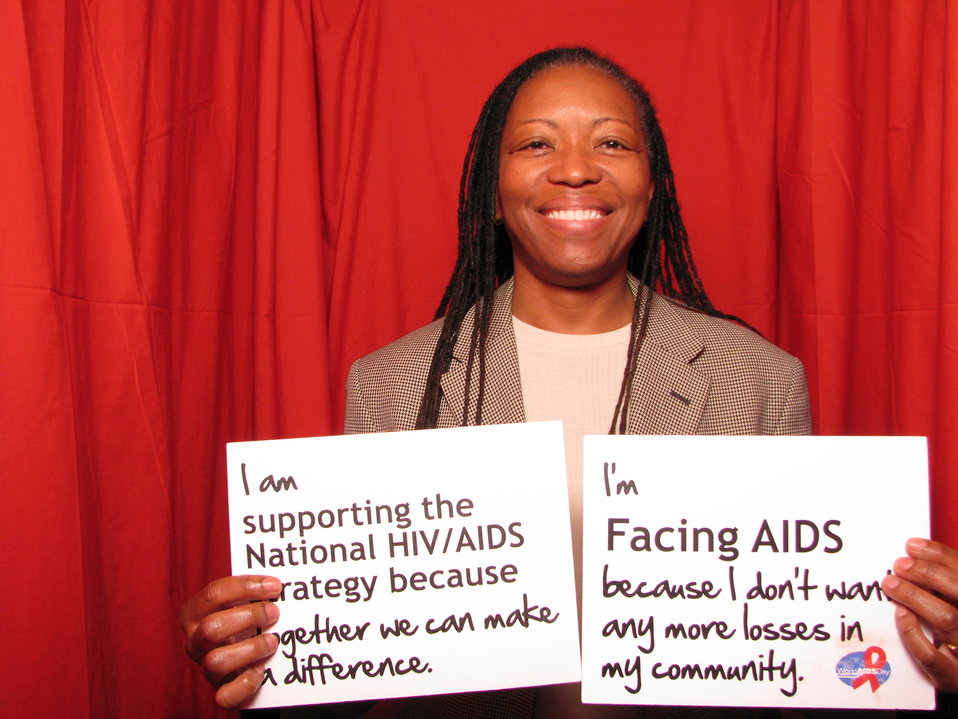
I am Supporting the National HIV/AIDS Strategy because Together We Can Make a Difference. I'm FACING AIDS because I Don't Want Any More Losses in My Community.

From the AIDS.gov photo booth at the U.S. Conference on AIDS, September 2010 (Orlando, FL).